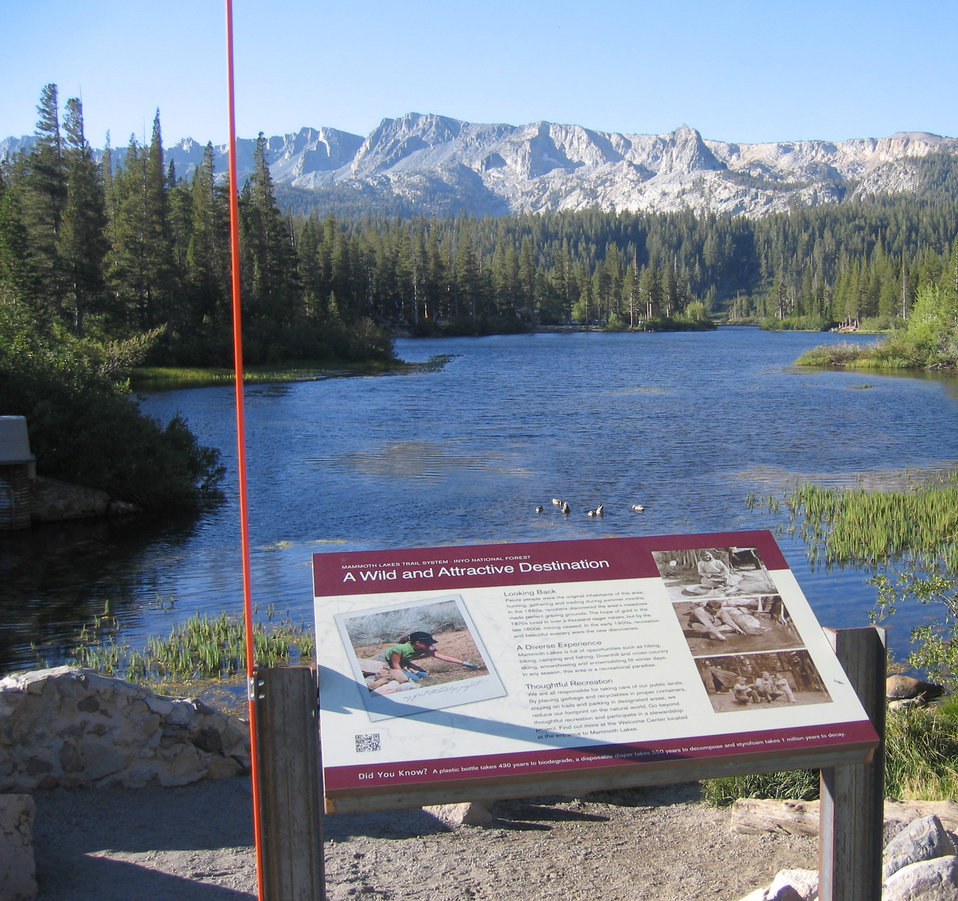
Lakes Basin Interpretative Sign

The Mary Road Bike Path gains nearly 1,000 feet of breathtaking elevation over 5.3 miles of Inyo National Forest land, California.